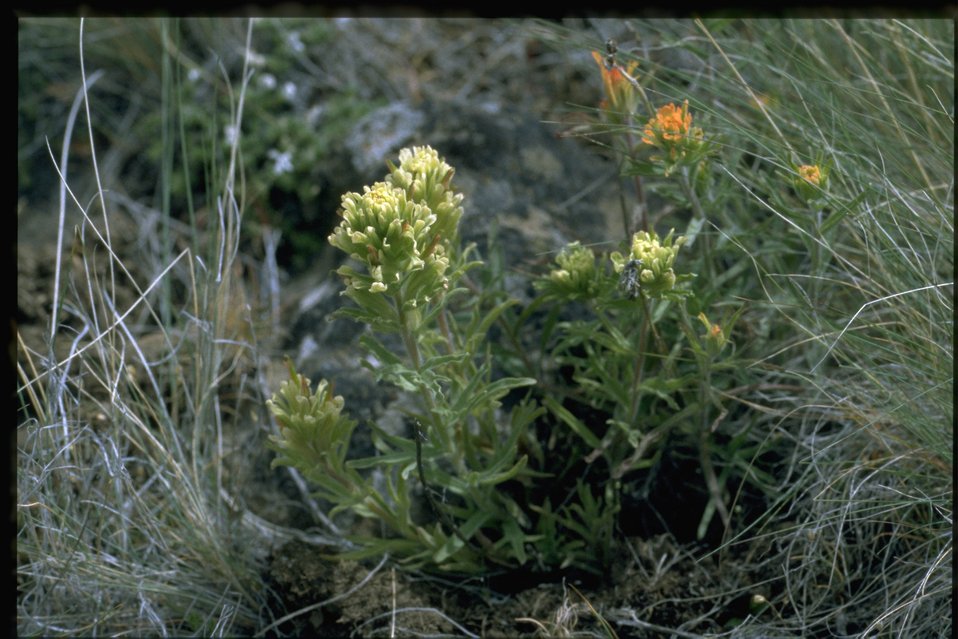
Farshot of yellowhairy Indian paintbrush (Castilleja xanthotricha).